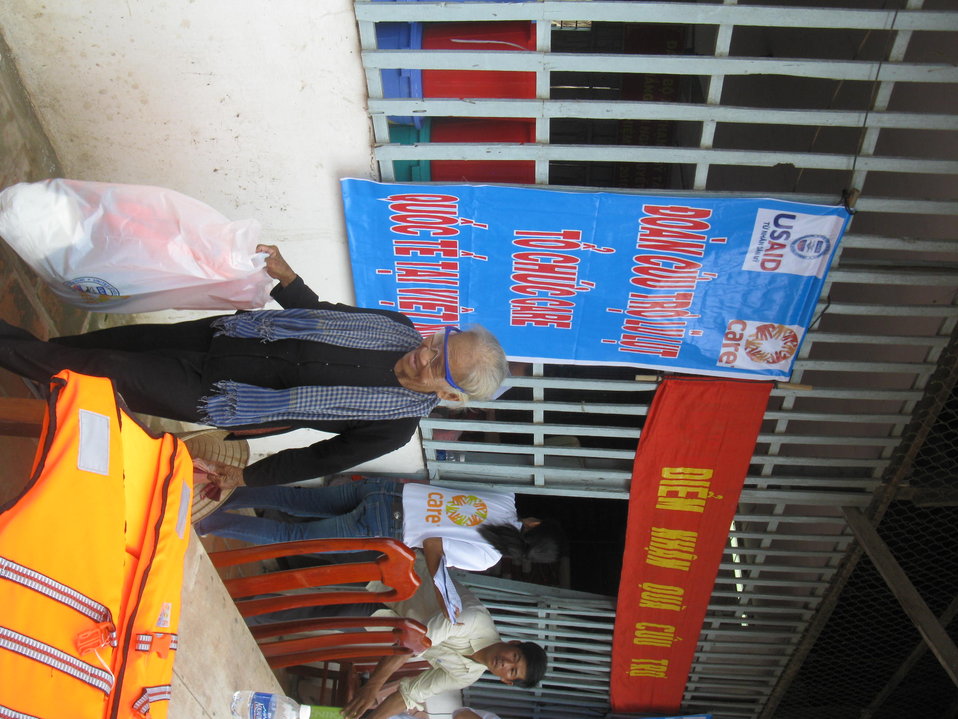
USAID Relief distribution in Giang An Province

November 8, 2011